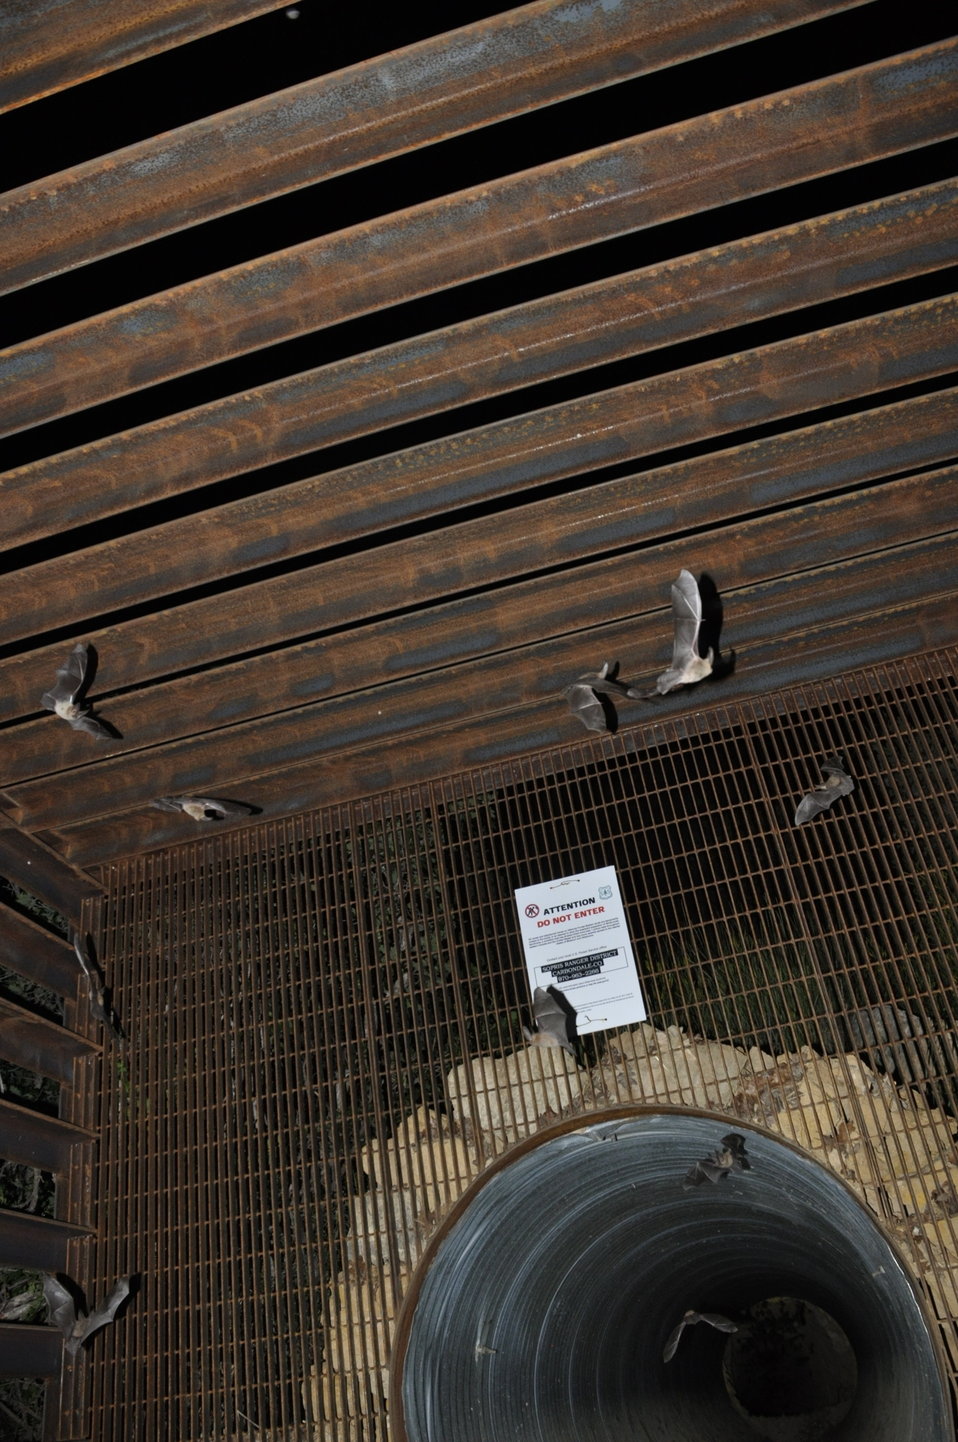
Bats exiting mine

Townsend's big-eared bats exiting maternity colony site (mine) near Marble, CO